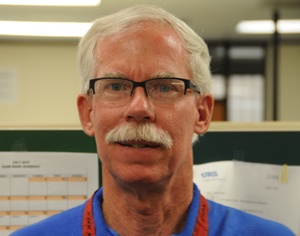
ARRA Puts Retired Fire Chief Back To Work At WIPP

As the result of ARRA funding accelerating cleanup activities, an additional trainer was needed to support the first responder-training program. Retired Carlsbad Fire Chief Tom Duffin was the right person for the job. Tom has 20 years of experience in the first responder world and has a first-hand understanding of the needs of these individuals. As an ARRA-funded WIPP trainer, Tom spends the majority of his time traveling from state to state training first responders along existing shipment routes and those not yet opened